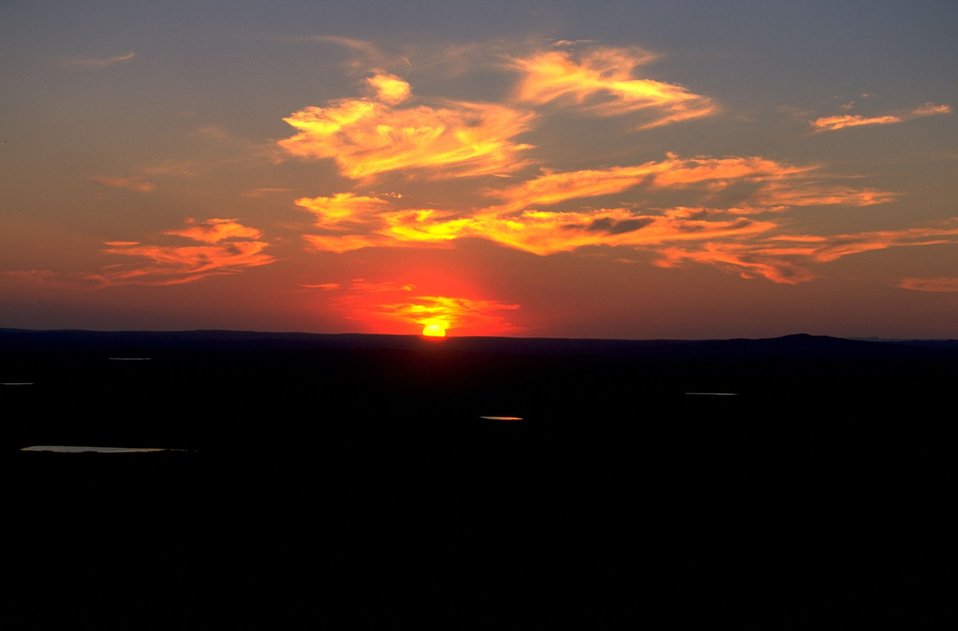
Sunset 35 mles north of Belle Fourche on Porcupine Creek Allotment